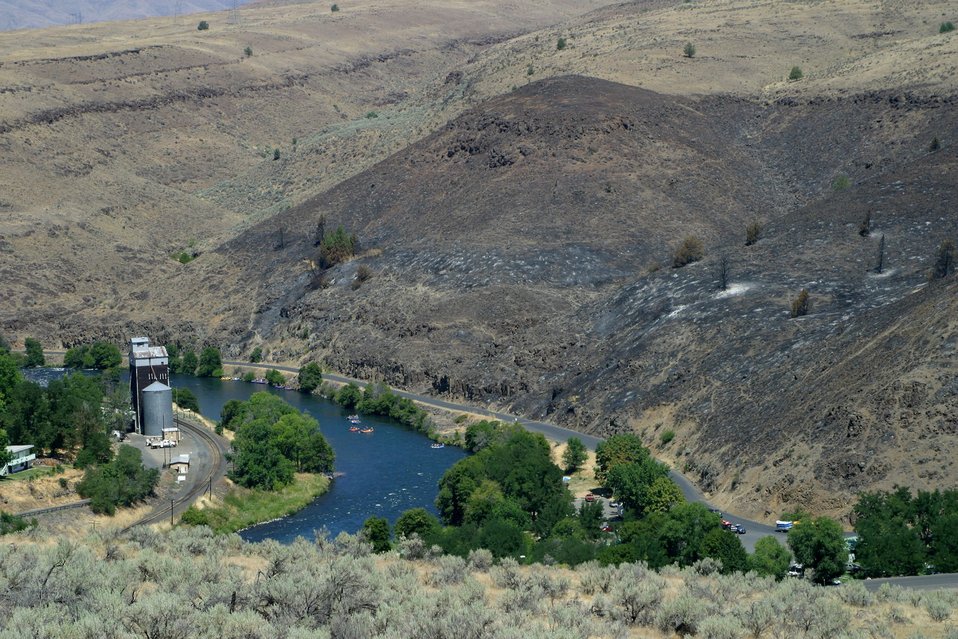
View of a fire east of Maupin.